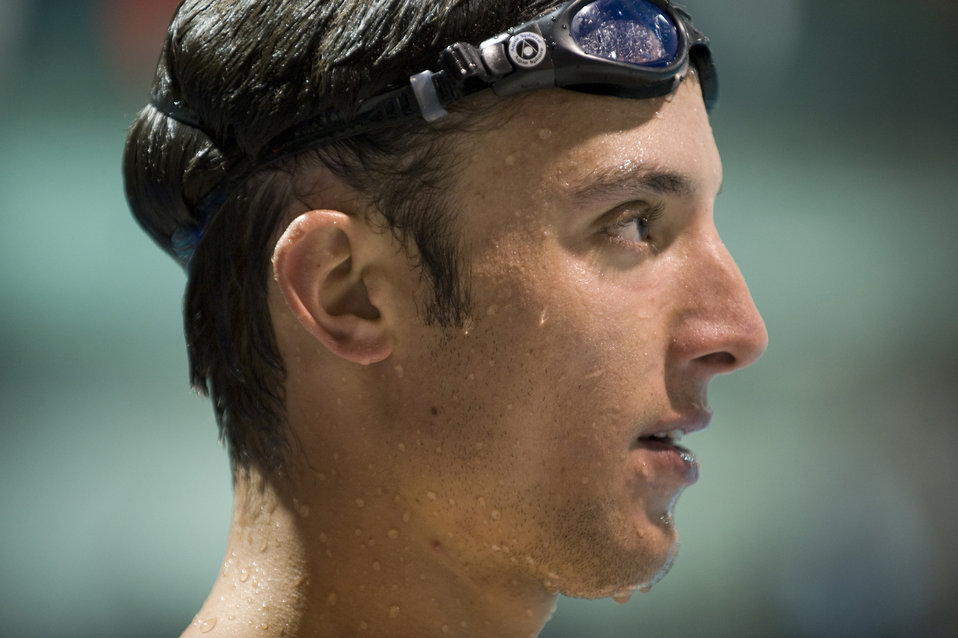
Warrior Games Airmen prepare for competition

Staff Sgt. Marc Esposito watches his team during swim practice May 11, 2010, at the Olympic Training Center in Colorado Springs, Colo. These wounded, injured and ill athletes are competing against athletes from all services in the inaugural Warrior Games May 10 through May 14, 2010. Sergeant Esposito is assigned to Pope Air Force Base, N.C.